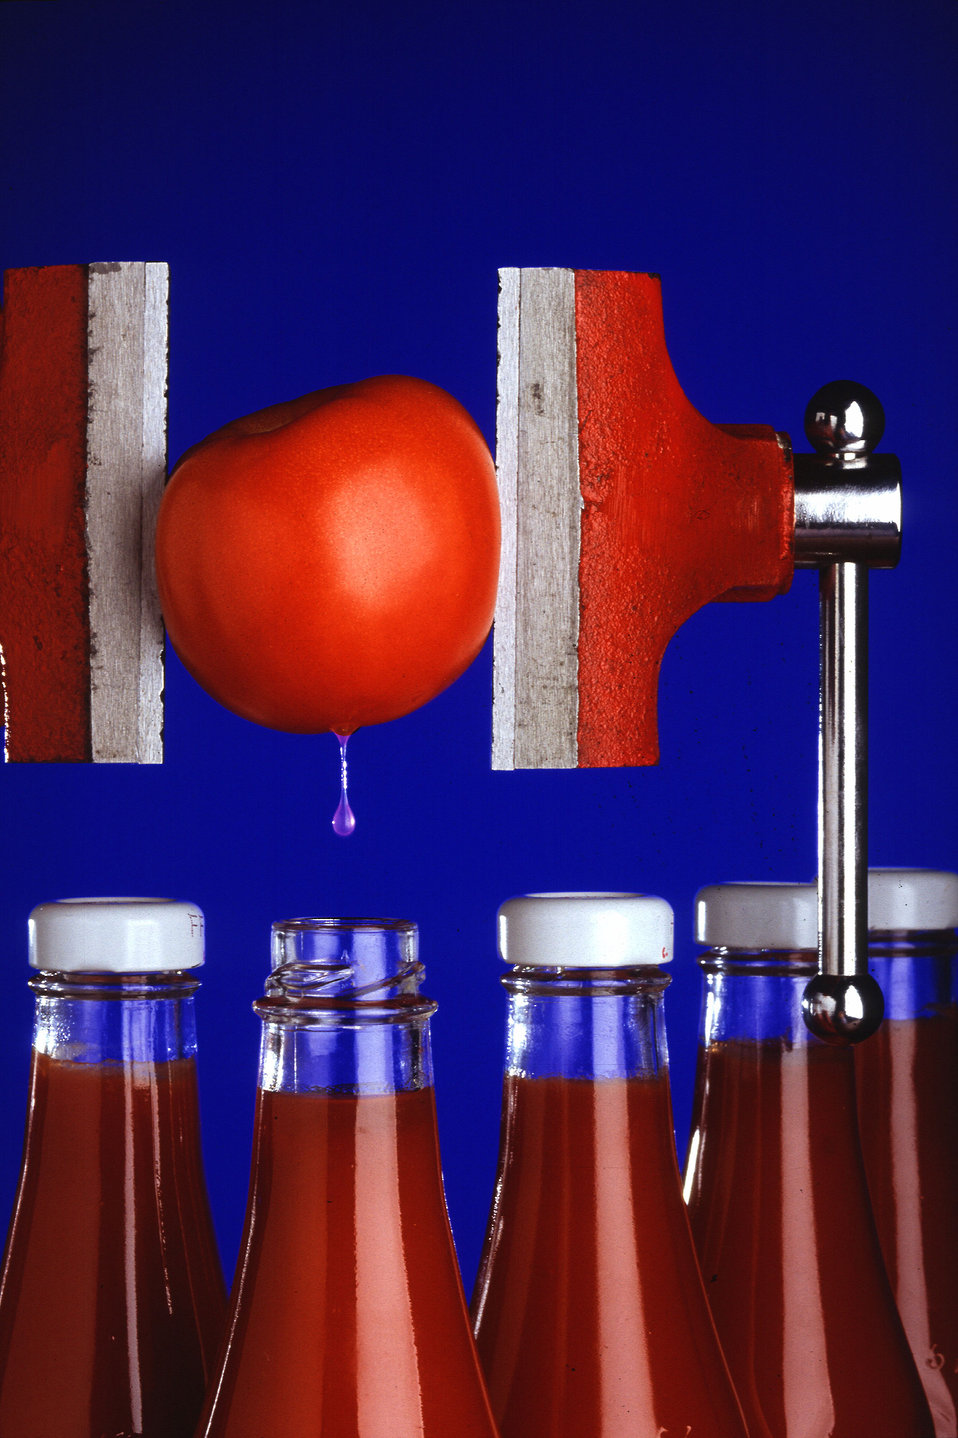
When you buy a tomato product-a bottle of catsup, a can of tomato soup, or a jar of spaghetti sauce-you're paying the cost of removing that water. But thanks to U.S. Department of Agriculture (USDA), Agriculture Research Service, (ARS) research by plant physiologist Merle Weaver at the Western Regional Research Center, in Albany California, tomorrow's tomatoes might have less water and more of the compounds called solids that processors condense at the factory. The concentrate, rich in fiber and natural sugars, becomes the starting point for tomato paste and most of the other tomato-based foods at your supermarket.